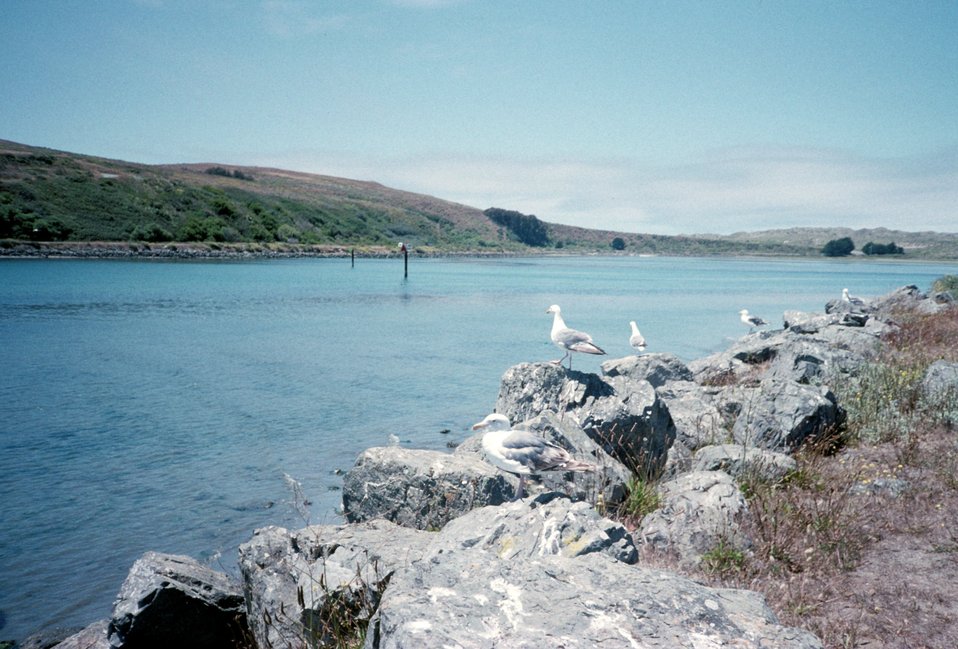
Doran Beach